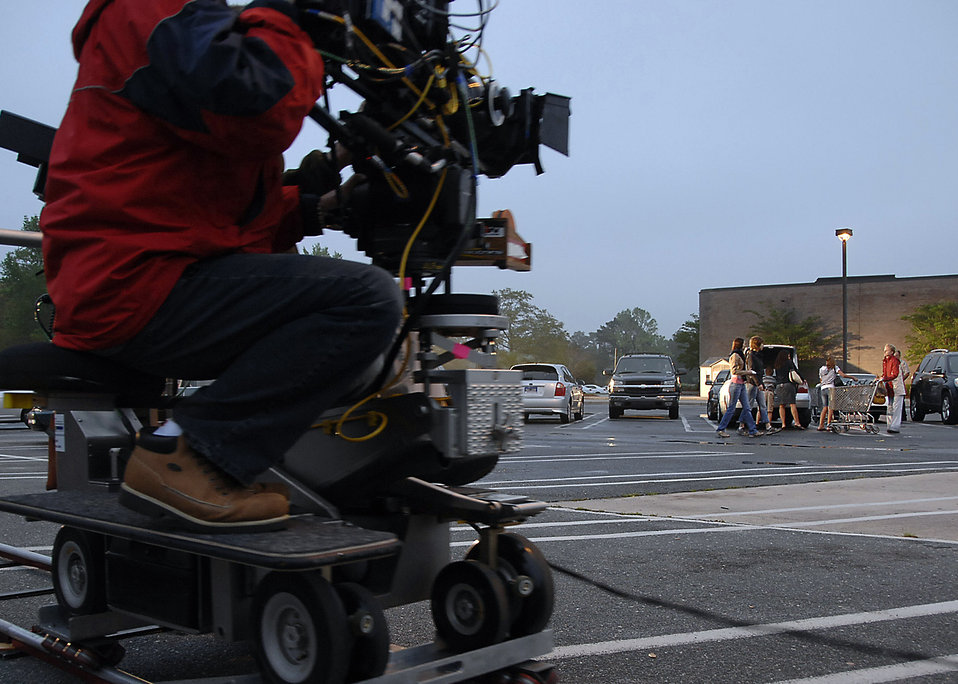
'Army Wives' films on Charleston

A cameraman for the Lifetime television show